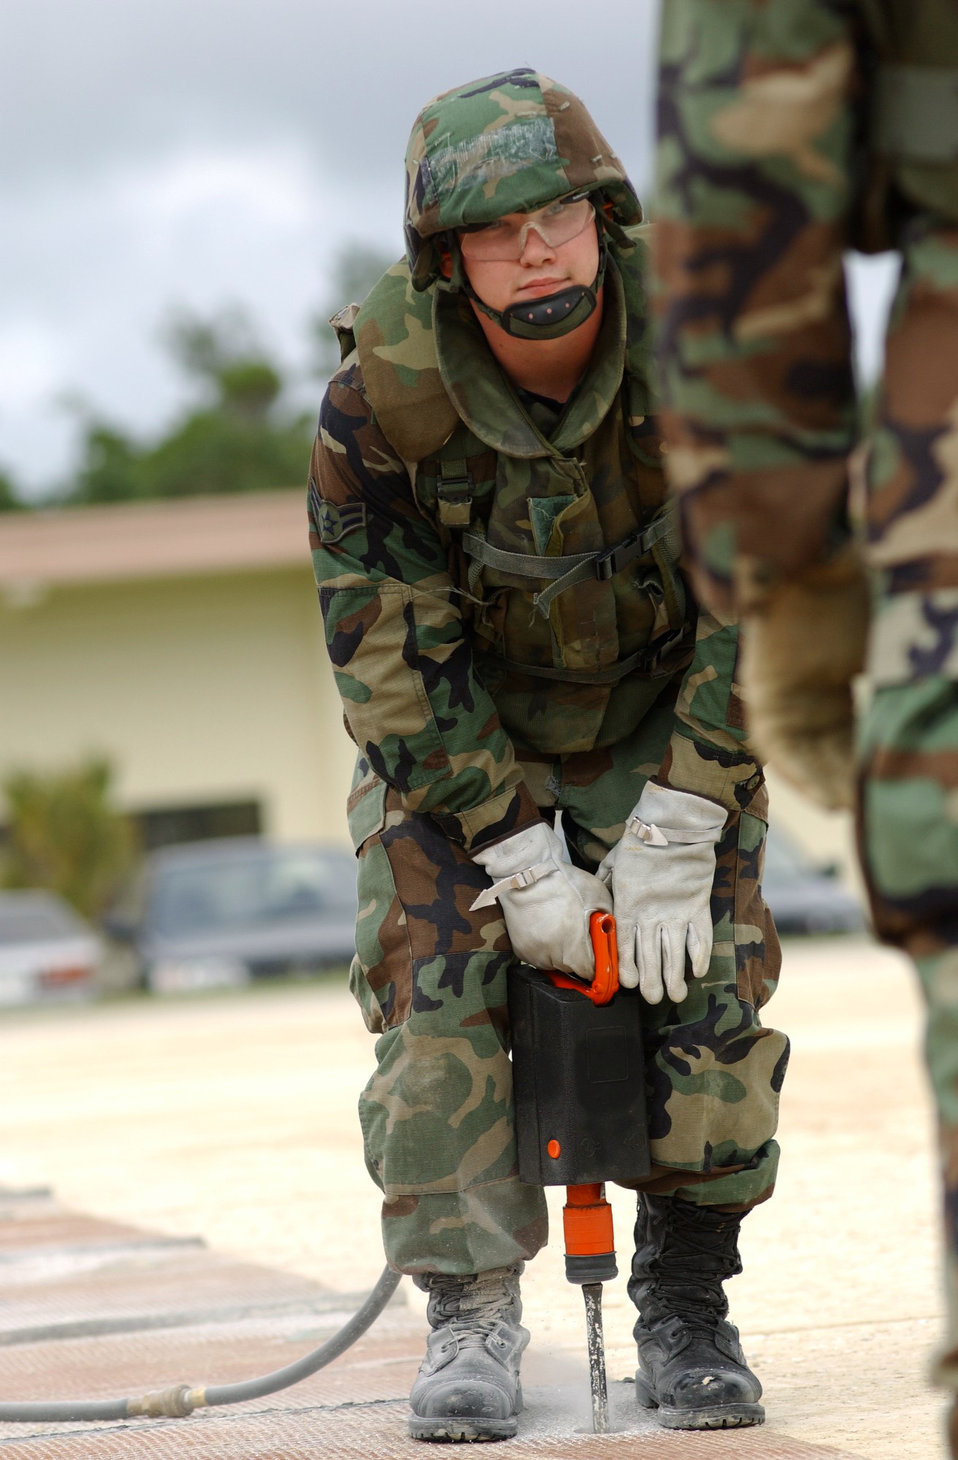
Rapid repair

KADENA AIR BASE, Japan -- Airman 1st Class David Popp competes in the recent Pacific Command Airfield Damage Repair Commander's Cup competition. In this event, he has to drill holes on the runway to secure a 1/4-inch fiberglass matting used as a protective barrier between the dirt and aircraft. Airman Popp is assigned to the 18th Civil Engineer Squadron here.